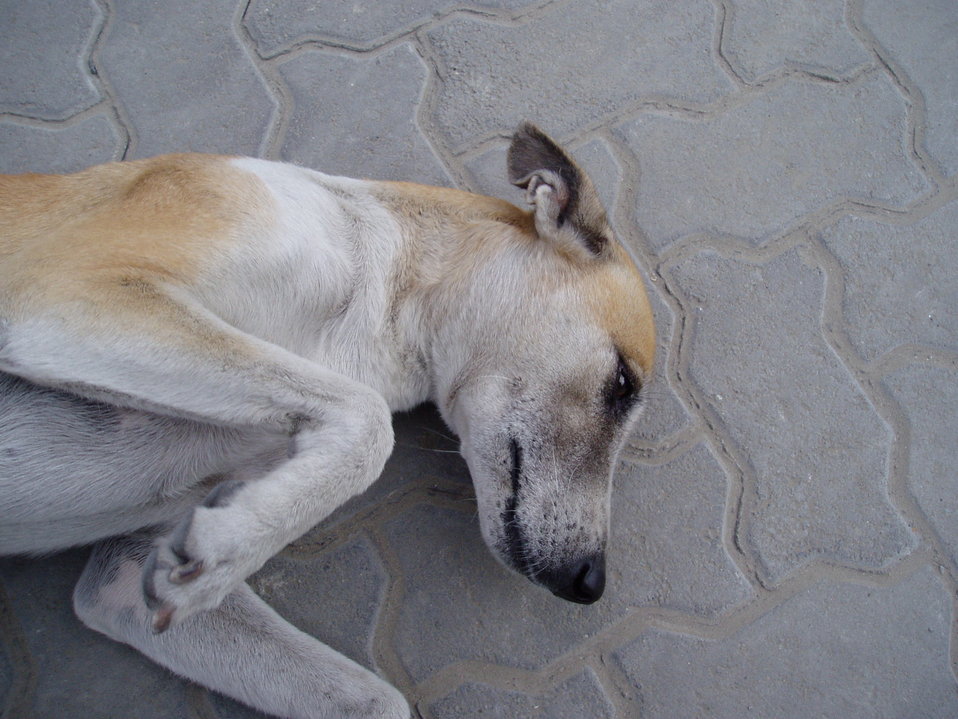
A picture of camel commodore's dog, getting scratched.